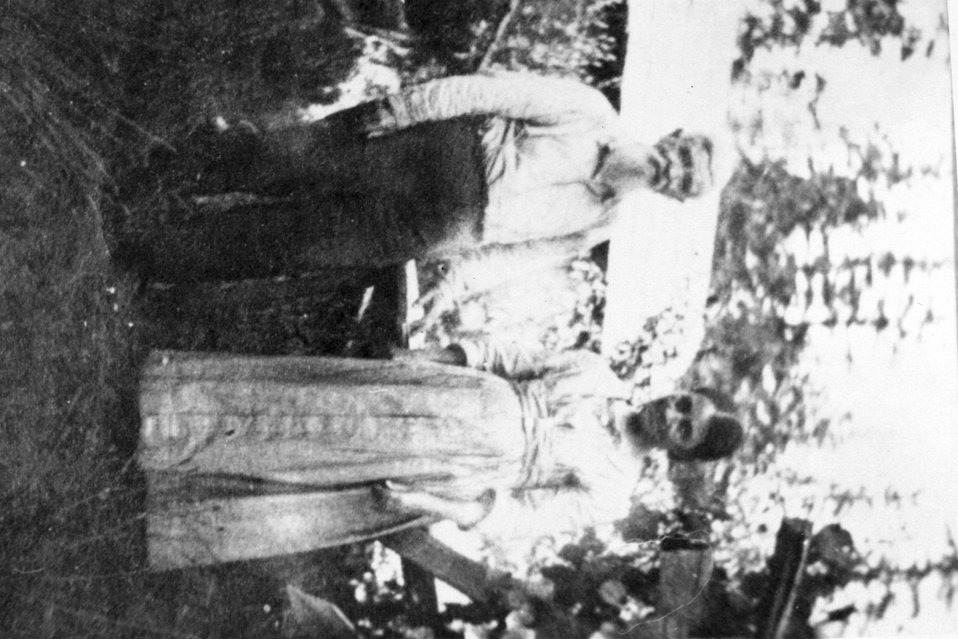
Elijah and Belle Price at Illahe.